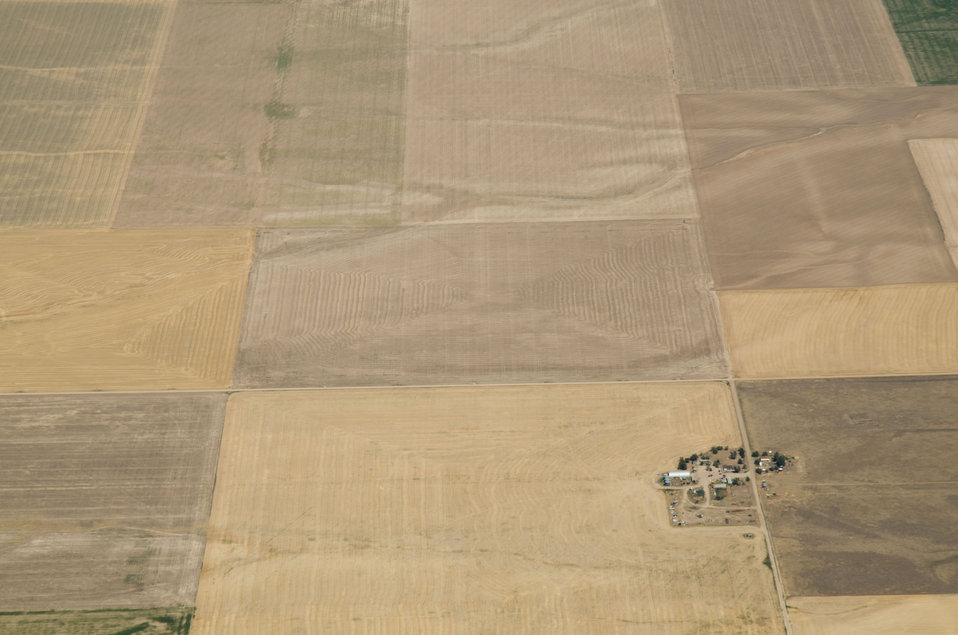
Aerial views of drought affected Colorado farm lands near Strasburg, Colorado, on Saturday, July 21, 2012.